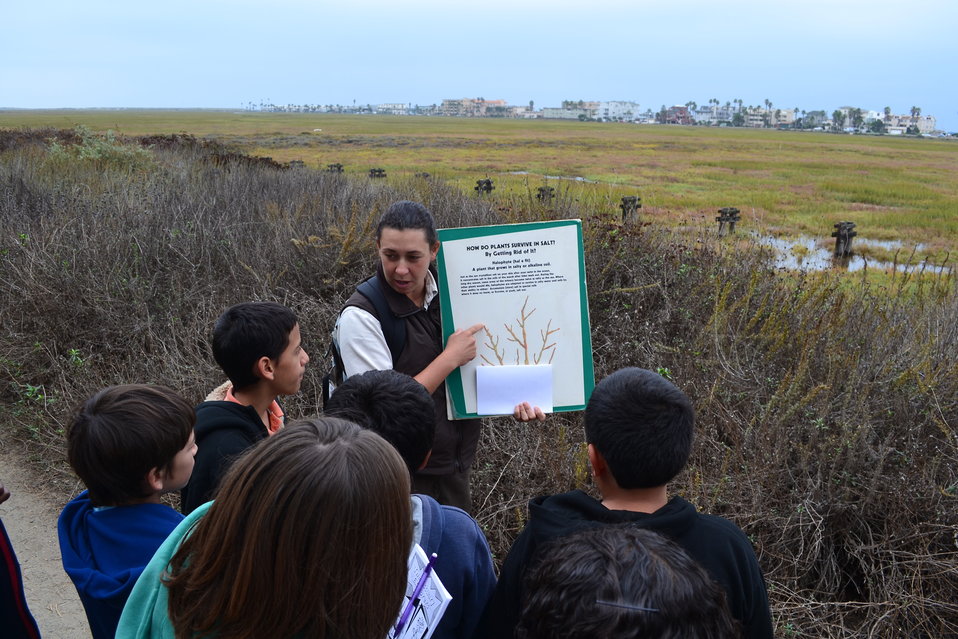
Is this an 'accumulator' or an 'excretor'?

FWS Environmental Education Specialist Chantel Jimenez gives an introduction to salt marsh plants and why they are so special